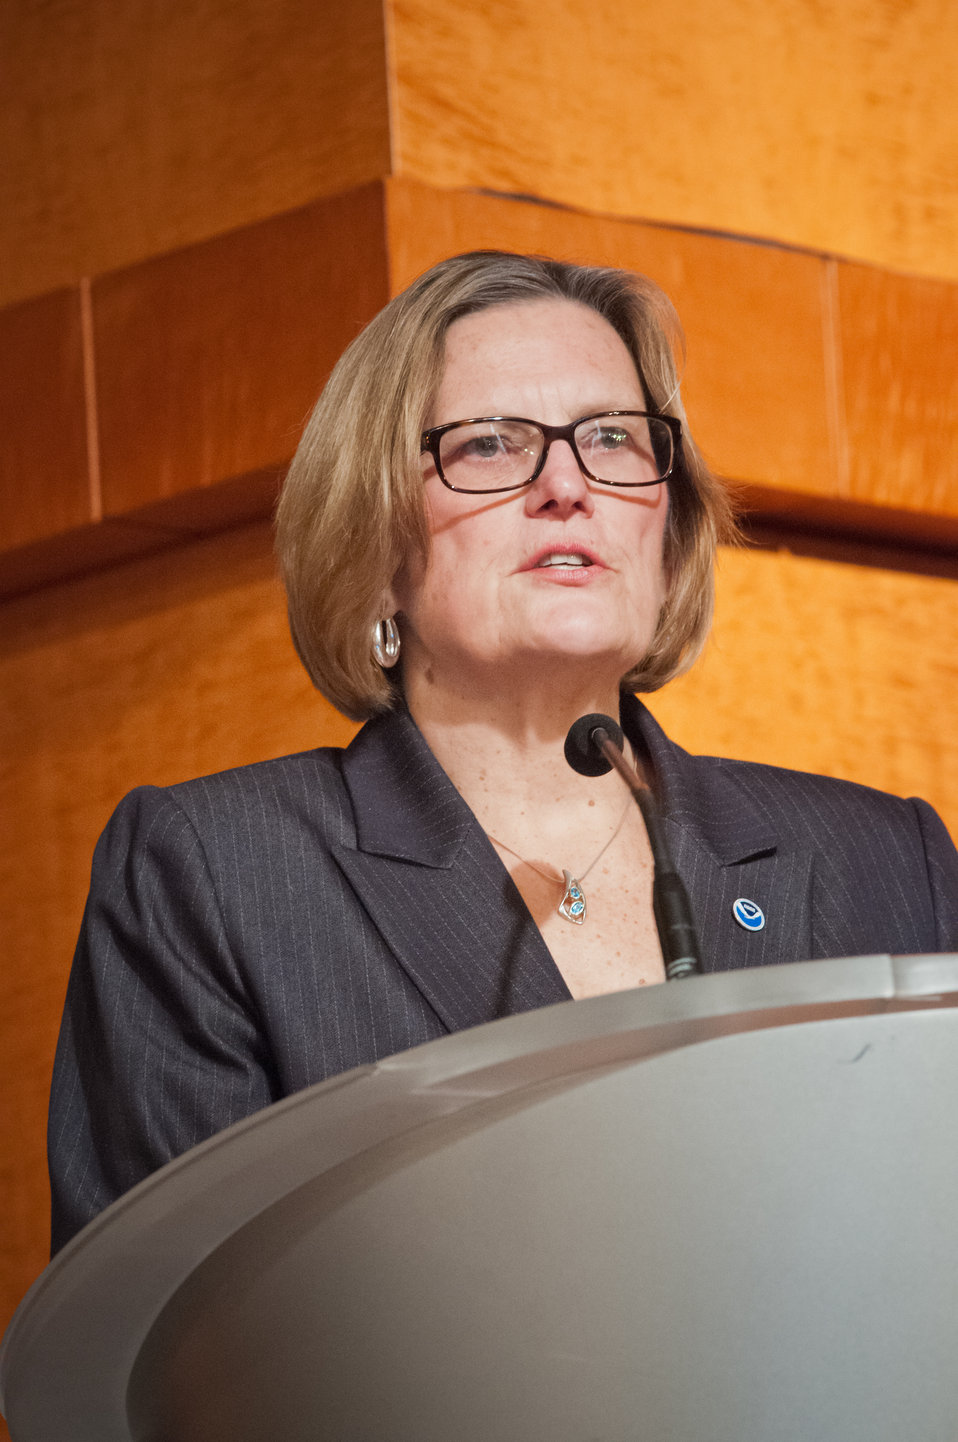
Acting Under Secretary Commerce for Oceans and Atmosphere and Acting National Oceanic and Atmospheric Administration (NOAA) Administrator Dr. Kathryn Sullivan makes opening remarks on the second day of the two day G-8 International Conference on Open Data for Agriculture in Washington, D.C. on Monday, Apr. 29, 2013. Agriculture Secretary Tom Vilsack announced the launch of a new 'virtual community' as part of a suite of actions, including the release of new data that the U.S. is taking to give farmers and ranchers, scientists, policy makers and other members of the public easy access to publicly funded data to help increase food security and nutrition at the conference.